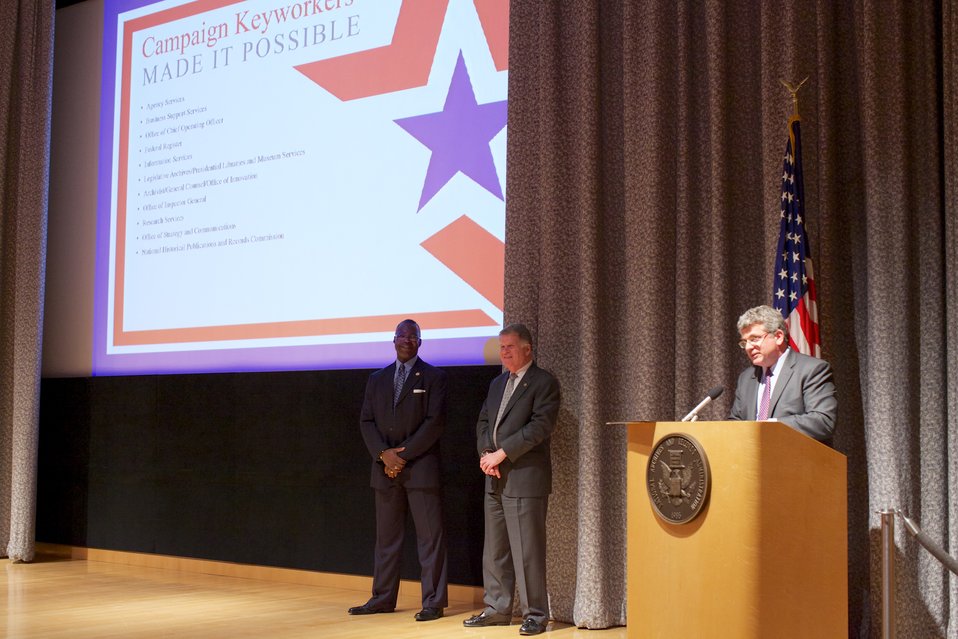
CFC Recognition Event